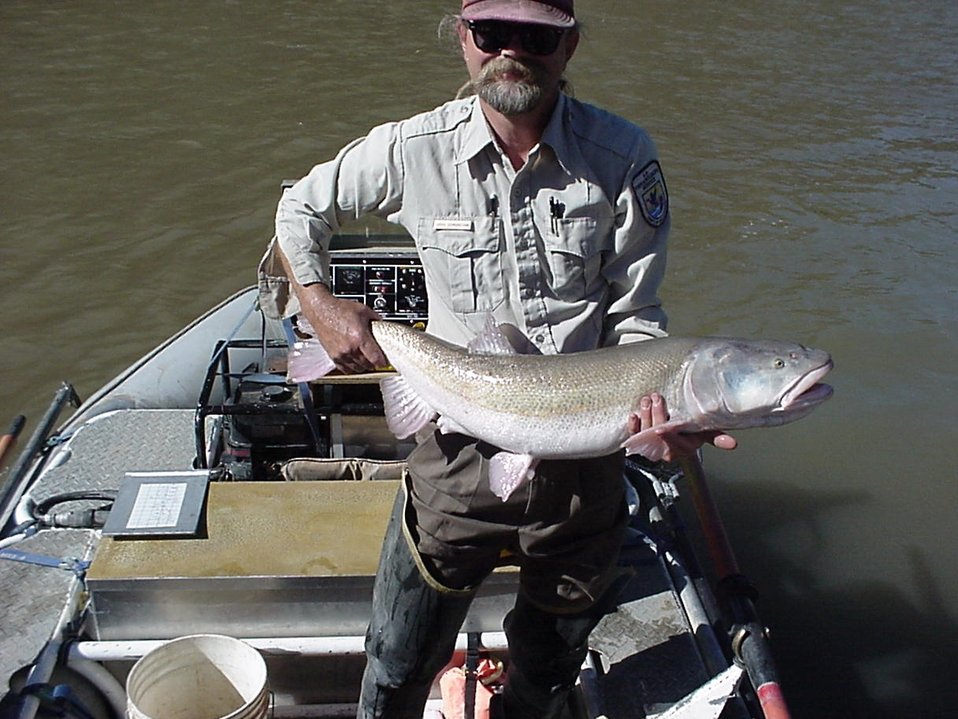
Colorado Pikeminnow

USFWS Biologist Doug Osmundsen holds an endangered Colorado pikeminnow (Ptychocheilus lucius) captured in the Colorado River near Grand Junction in western Colorado. The Colorado pikeminnow is the largest minnow in North America and is known to migrate long distances to spawn.